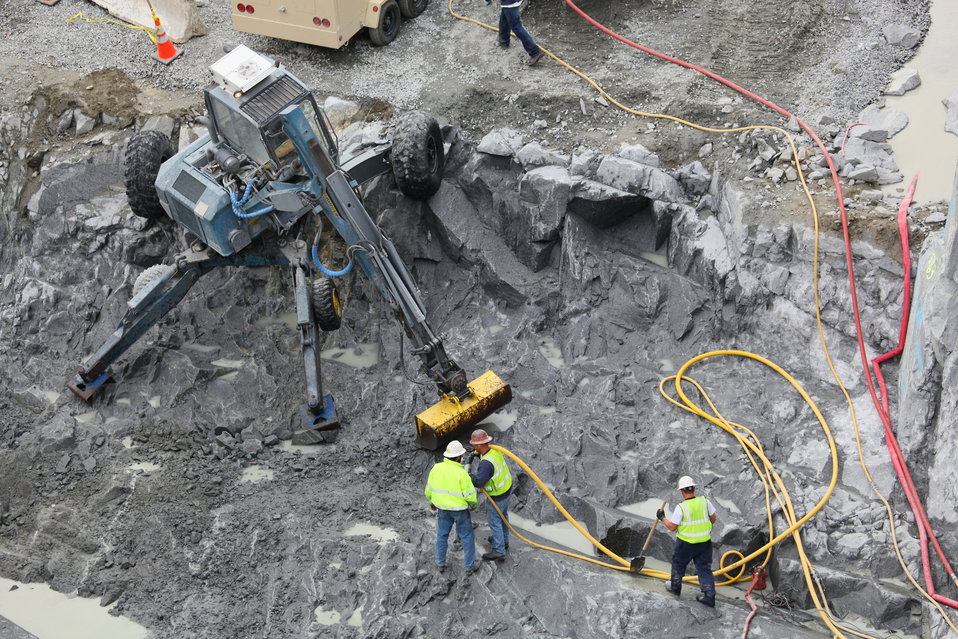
Final excavation cleanup at the Folsom JFP auxiliary spillway

A spider-like tractor and contractors for the U.S. Army Corps of Engineers Sacramento District clean up rock debris at the excavation site for the auxiliary spillway at the Folsom Dam in Folsom, Calif., April 26, 2012. The clean-up is in preparation of crane placement for upcoming concrete construction of the spillway later in May. The Sacramento District has shifted its focus to construction of the spillway's control structure, essentially a second dam. The spillway is scheduled to be ready for use in 2017 and will allow Folsom Dam to release water sooner and more safely, helping reduce flood risk for the Sacramento region.